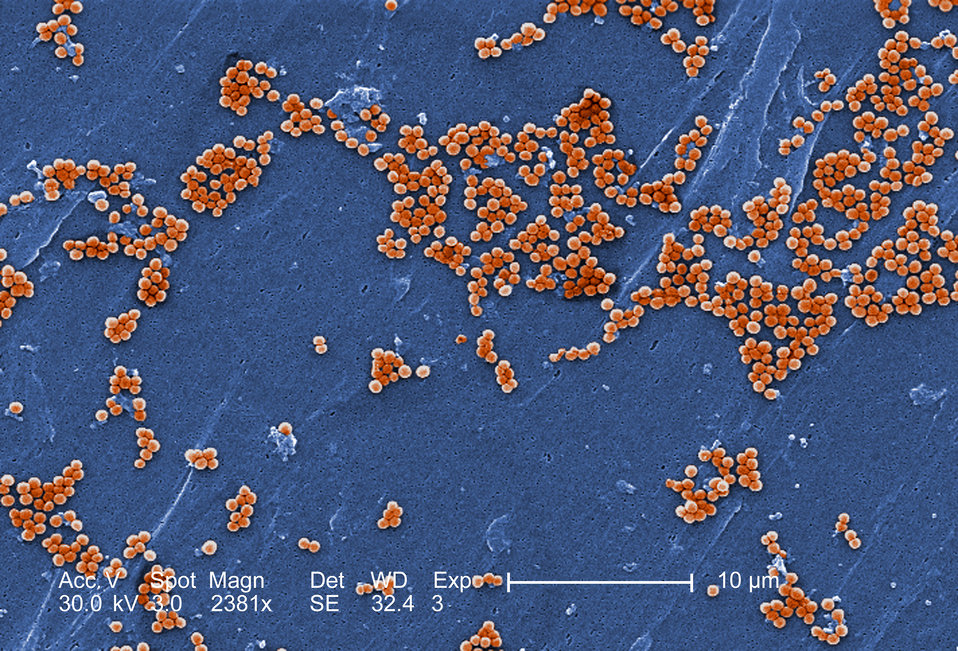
This 2005 scanning electron micrograph (SEM) depicted numerous clumps of methicillin-resistant Staphylococcus aureus bacteria, commonly referred to by the acronym, MRSA; Magnified 2381x. Recently recognized outbreaks, or clusters of MRSA in community settings have been associated with strains that have some unique microbiologic and genetic properties, compared with the traditional hospital-based MRSA strains, which suggests some biologic properties, e.g., virulence factors like toxins, may allow the community strains to spread more easily, or cause more skin disease. A common strain named USA300-0114 has caused many such outbreaks in the United States. See PHIL 7823 for a black and white version of this micrograph.